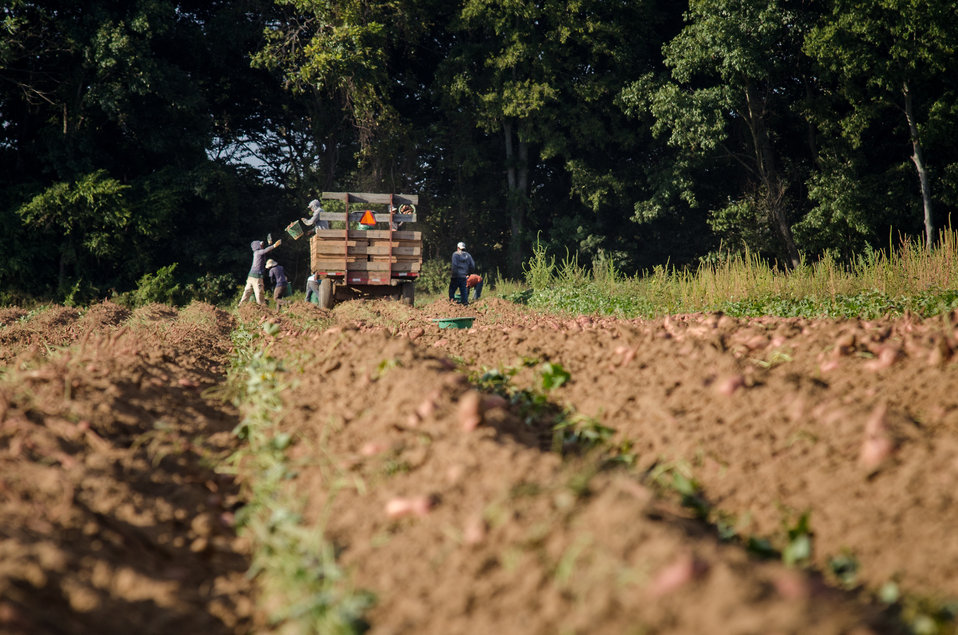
Harvested sweet potatoes are loaded onto a trailer at the Kirby Farms in Mechanicsville, VA on Friday, Sept. 20, 2013. The hand picked potatoes are taken to an onsite-heated warehouse to cure, a process that toughens the skin and brings the sweetness to a level normally expected in markets. Kirby Farms devotes 200 acres v to eggplant, spinach, beets, tomato, jalapeno peppers, melons and a variety of greens. Soybeans and small grain are grown on the remaining 300 acres. Using rotational crop practices allows Kirby Farms to double and triple crop yields. Wholesalers, who buy from this farm, sell the produce to major supermarkets in the Mid-Atlantic region, from North Carolina to Maryland. Restaurants in the local area prepare and serve the local bought produce to patrons in the Richmond, VA metropolitan area.